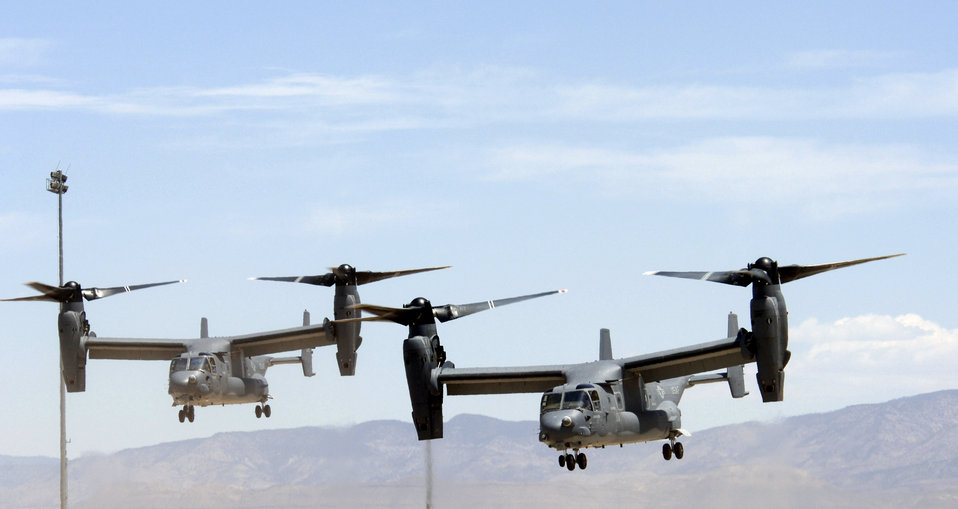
Ospreys in flight

Two Air Force CV-22 Ospreys prepare to land at Holloman Air Force Base, N.M., on Friday, May 26, 2006. These Osprey are two of only three in the Air Force inventory. The Ospreys and their crews are taking part in the filming of the movie,